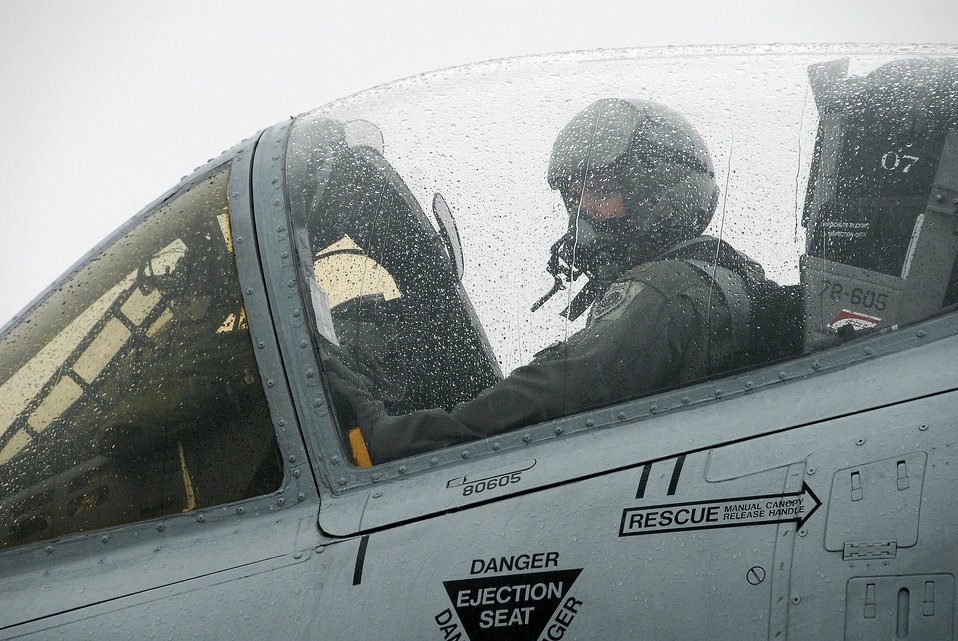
Hawgsmoke 2008 begins

Maj. Preston McConnell, a 303rd Fighter Squadron A-10 Thunderbolt II pilot, waits for his crew chief to signal chocks-in after landing at the Salina Airport in Salina, Kan. Major McConnell flew the first A-10 to arrive at Salina for the Air Force's Hawgsmoke 2008; a biennial A-10 bombing and tactical gunnery competition. The event, hosted by Airmen from the 442nd FW's 303rd Fighter Squadron, tests A-10 pilots in flight leadership, target acquisition, weapons delivery. The 442nd FW is an Air Force Reserve Command unit based at Whiteman Air Force Base, Mo.